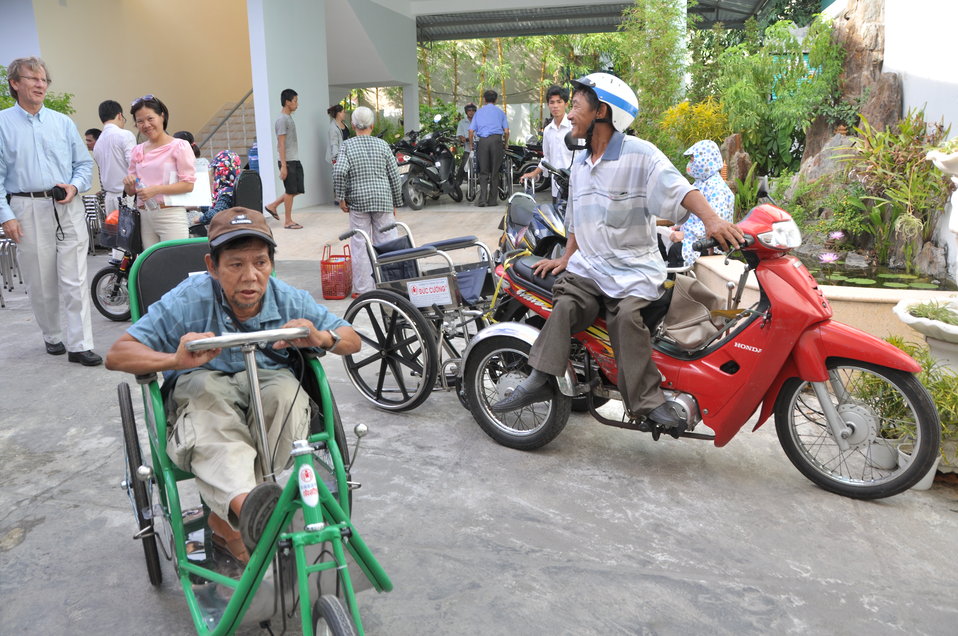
USAID Project Supports Rehabilitation Department for Children and Wheelchair Distribution in Danang

Beneficiaries in Danang, Vietnam, receive wheelchairs.